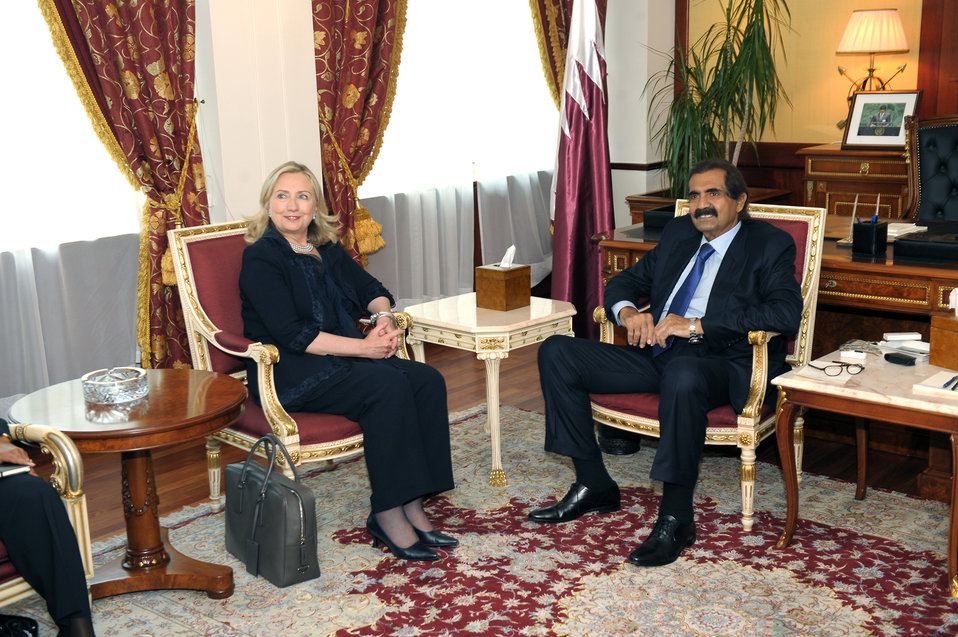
Secretary Clinton Meets With Qatari Amir Hamad bin Khalifa al-Thani

U.S. Secretary of State Hillary Rodham Clinton holds a bilateral meeting with Qatari Amir Hamad bin Khalifa al-Thani, at the Qatari Mission to the UN in New York, New York, on September 22, 2011.